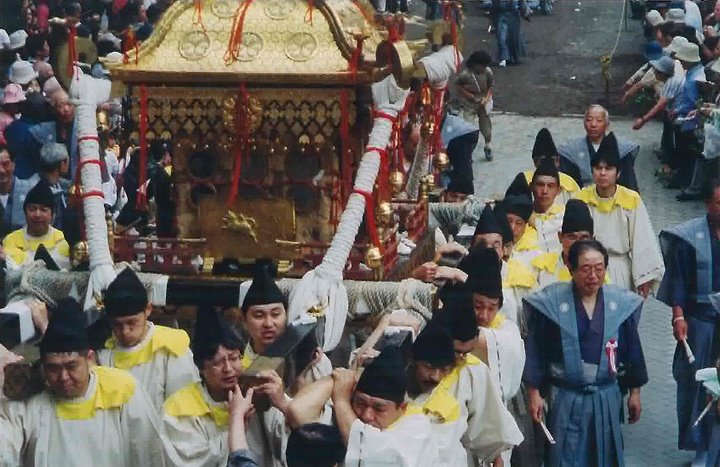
Photo I took at the 1000 Samurai festival in Nikko